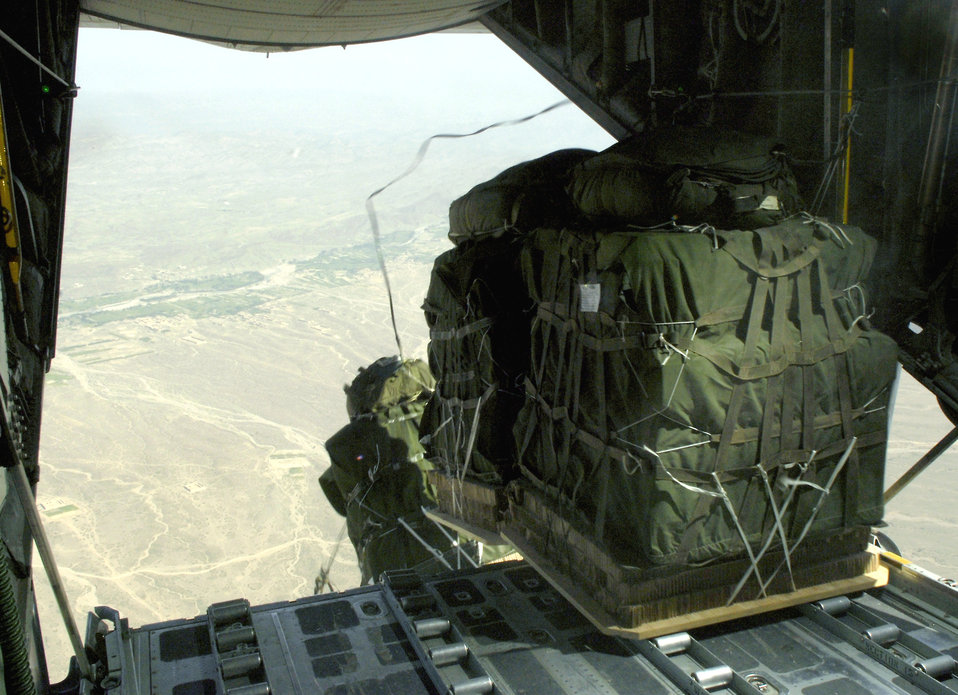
Bagram C-130s drop high-tech cargo delivery system

Joint Precision Air Drop System bundles fall out of the back of a C-130 Hercules Aug. 25. The drop was made from almost 10,000 feet above sea level and was calculated using up-to-the-minute wind data relayed from two small dropsondes deployed 20 minutes earlier. The dropsondes calculate wind speed and relay the information back to the aircraft, helping to calculate the correct drop point.